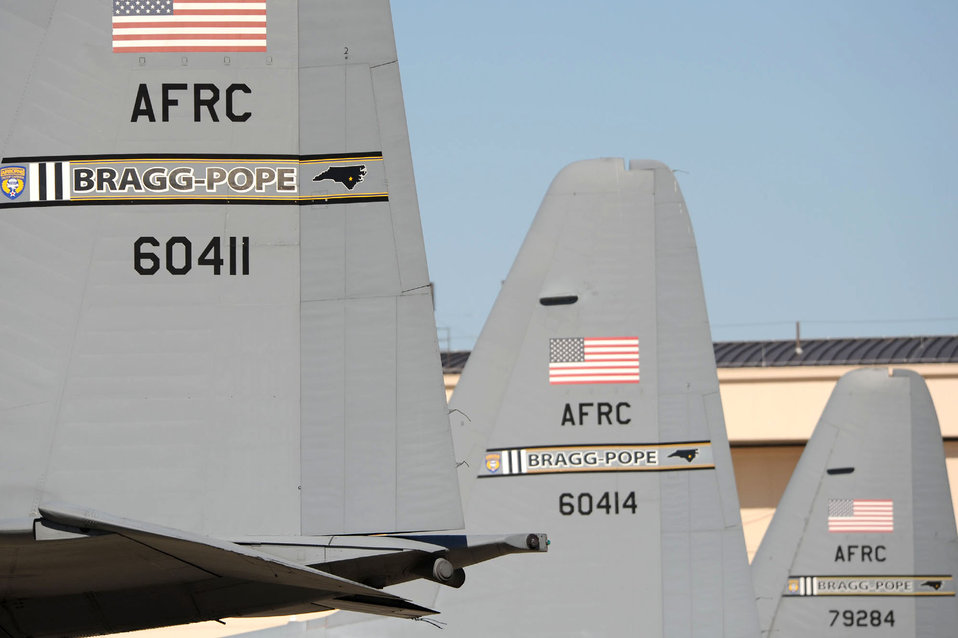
Pope Field

The C-130 Hercules aircraft displays the Fort Bragg-Pope Field tail flashing of the 440th Airlift Wing at Field, N.C. The former air force base was redesignated Pope Field March 1, 2011.